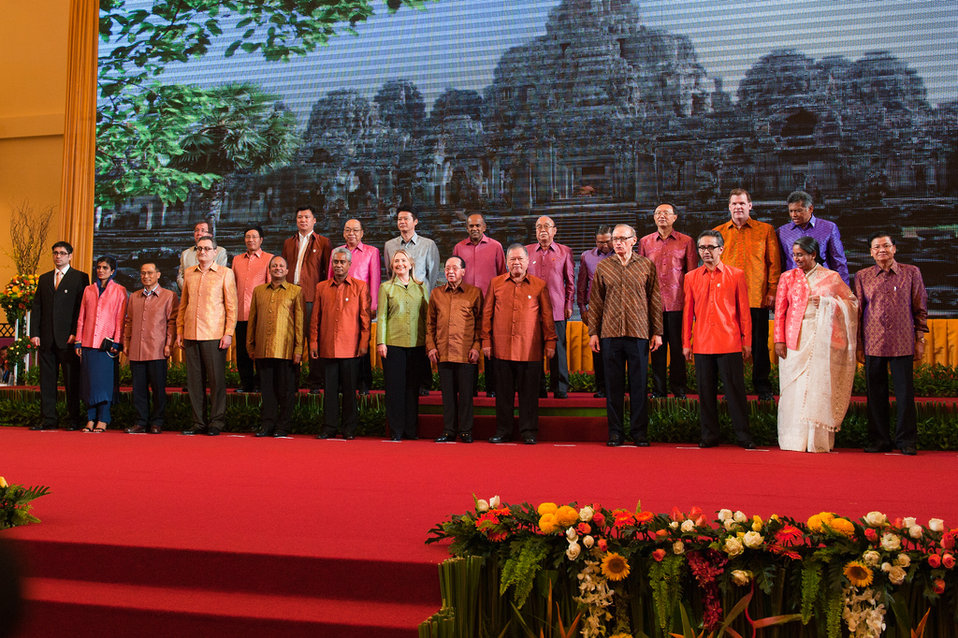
Secretary Clinton Poses for the ASEAN Family Photo

U.S. Secretary of State Hillary Rodham Clinton poses for the ASEAN family photo in Phnom Penh, Cambodia, on July 12, 2012.